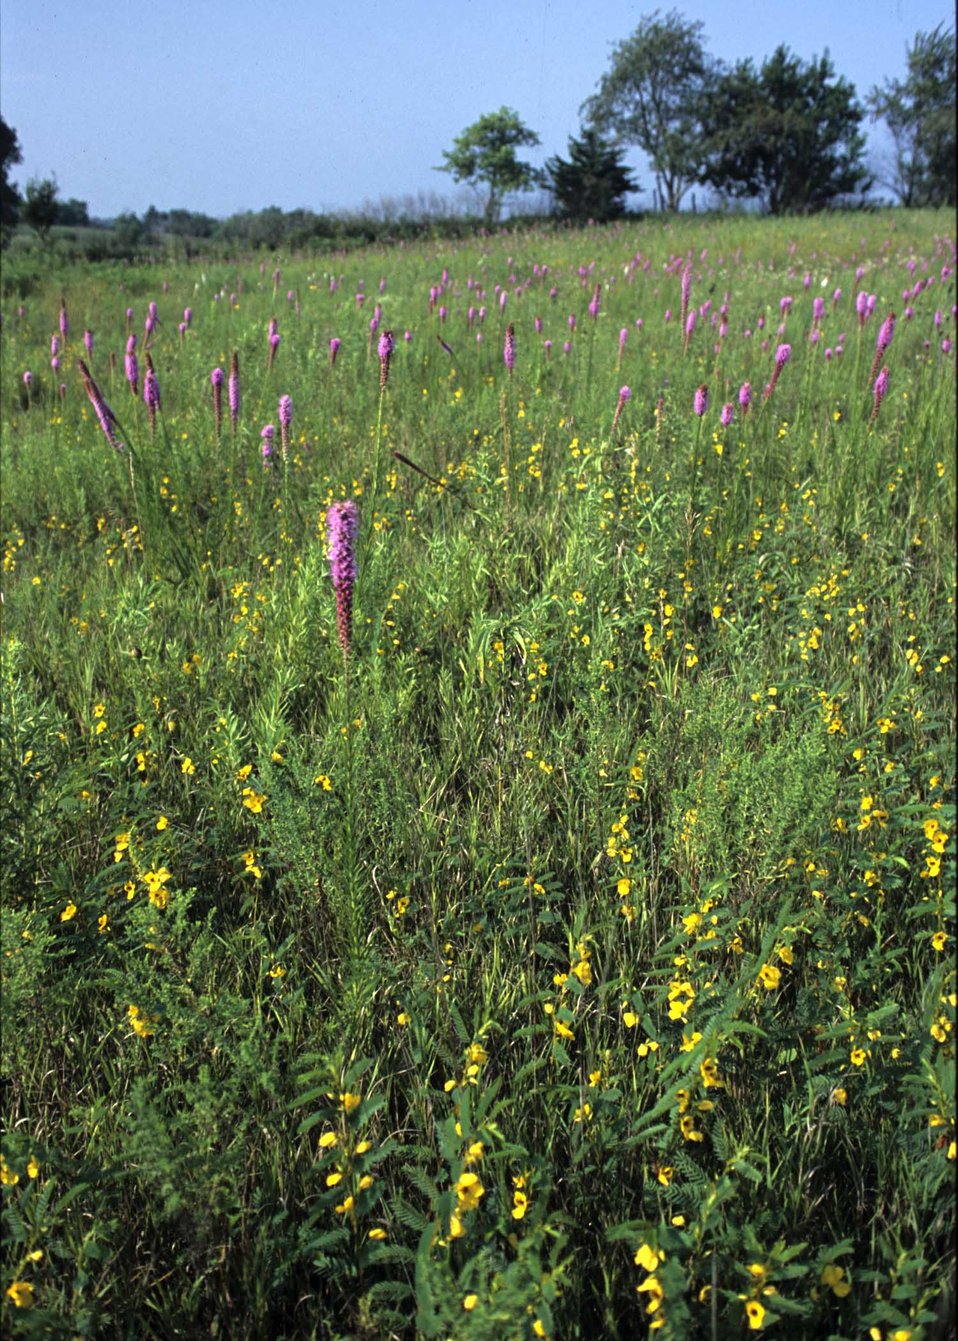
A native prairie in a CRP field in Madison County, Iowa, restored by burning the year prior to this photo being taken produces numerous prairie plants with new life.